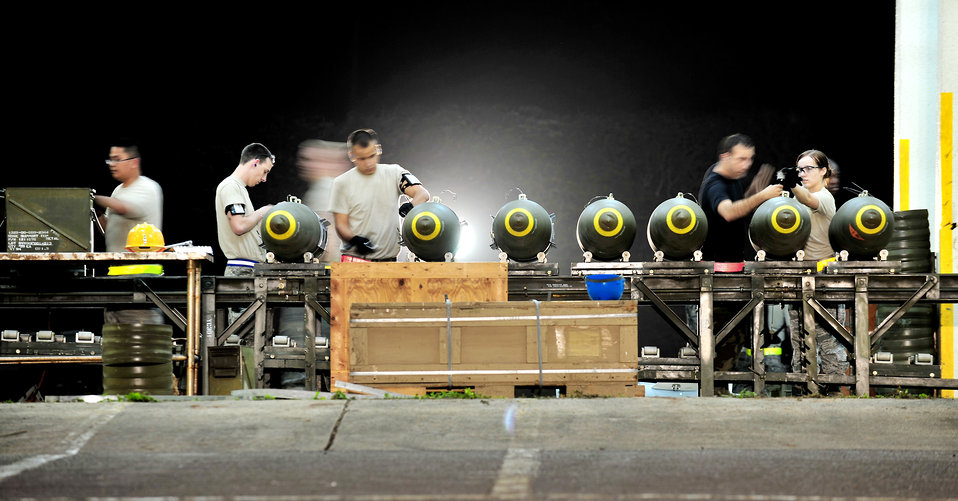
Kadena Airmen test readines during exercise

Airmen from the 18th Munitions Squadron build Mark-83 bomb bodies during a base exercise March 24, 2010, at Kadena Air Base, Japan. The 18th Wing participated in a local operational readiness exercise to test base Airmen's ability to defend Japan and maintain peace and stability in the Pacific region.